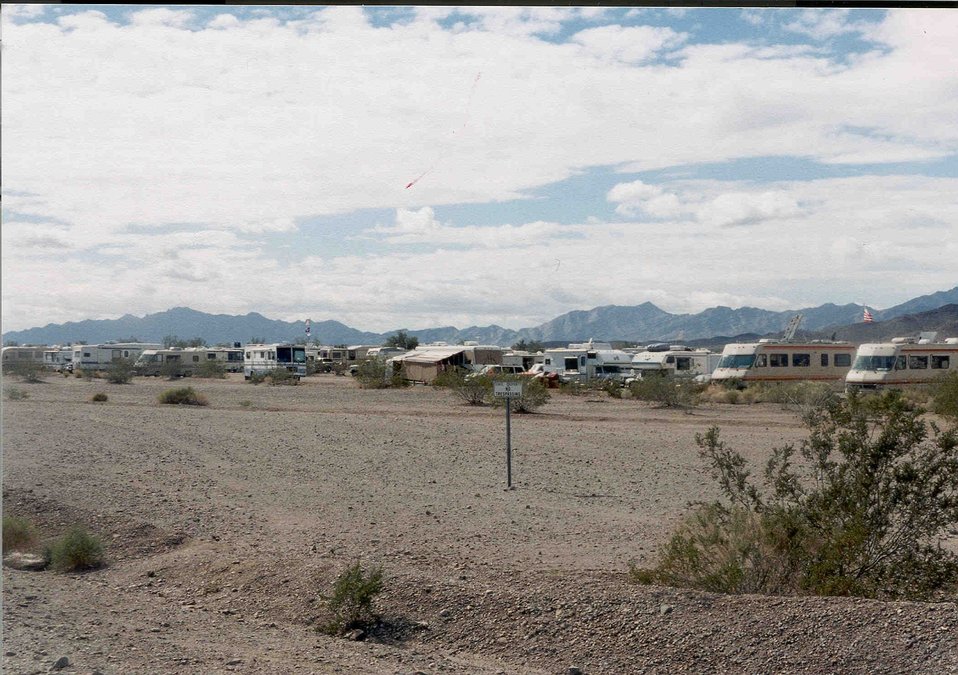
Long Term Visitor Area during the peak season